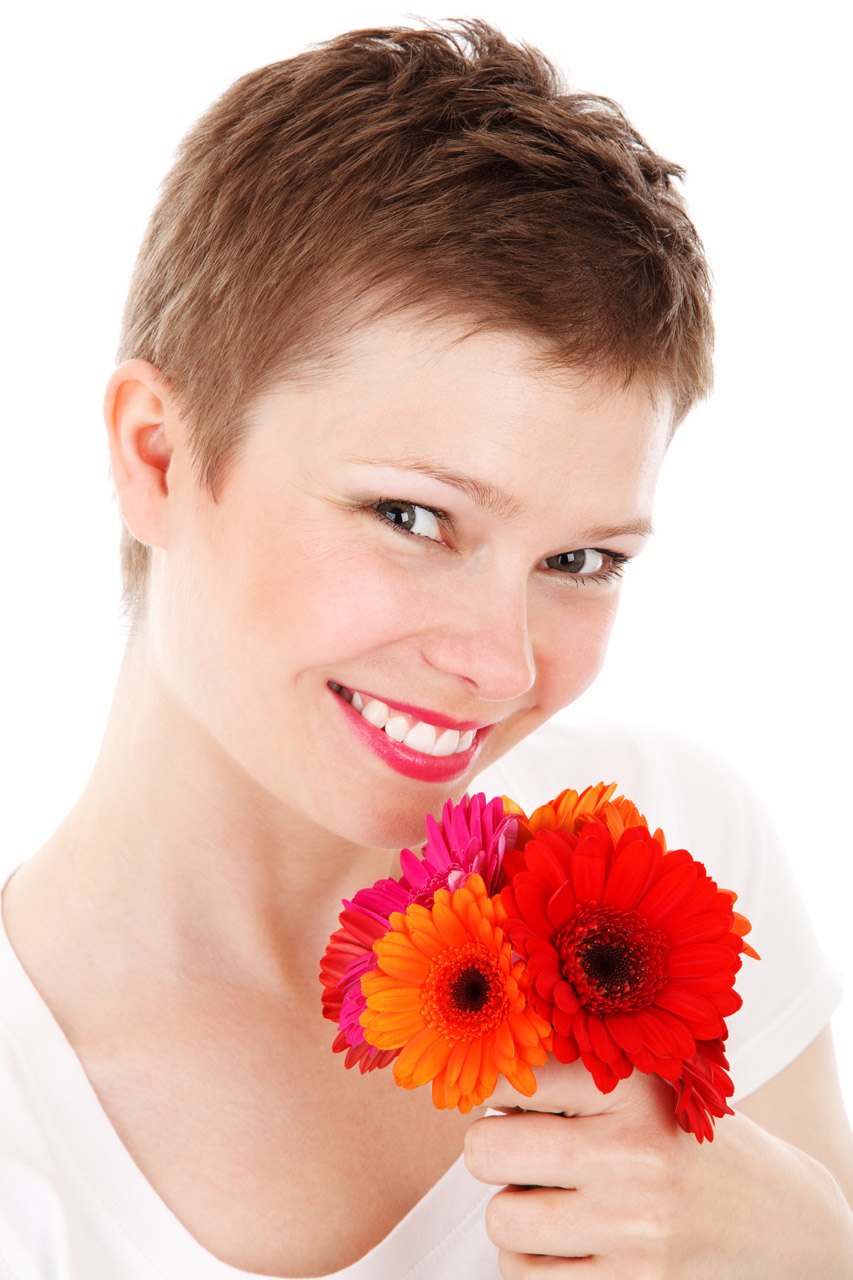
Woman with colorful flowers

Portrait of a young woman smiling with colorful flowers in her hand isolated on white background.